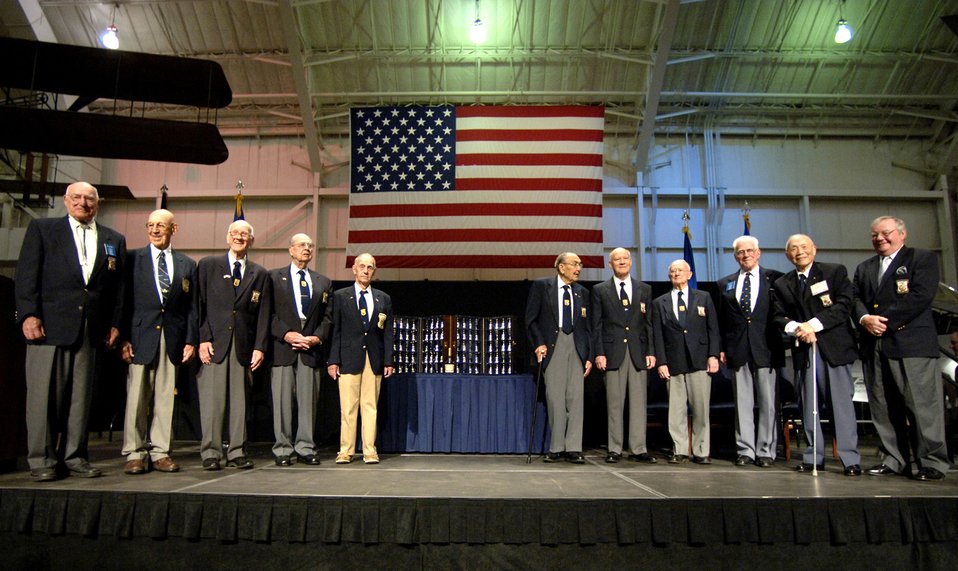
The Doolittle Raider's 64th Reunion

Retired Col. Bill Bower, retired Lt. Col. Dick Cole, Tom Griffin, retired Lt. Col Robert Hite, retired Master Sgt Ed Horton, Lt. Col. Chase Nielsen, David Thatcher, retired Lt. Col. Frank Kappeler, Col. John Doolittle, honorary Raider Tung-Sheng Liu and honorary Raider C. V. Glines pose for a photo after presenting their silver goblets to the National Museum of the U.S. Air Force. The silver goblets are symbolic gifts from the city of Tucson, Ariz., representing each of the 80 Doolittle Raiders.